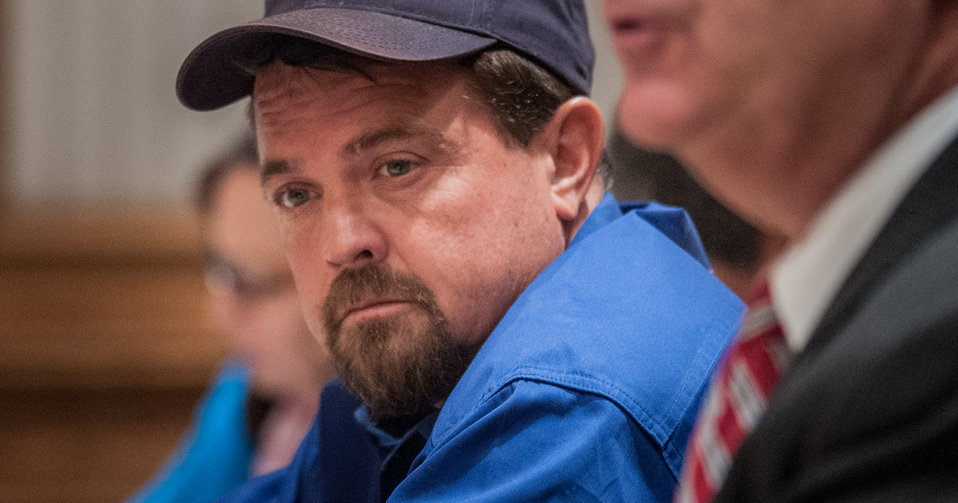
Henry “Porter” Holder a Farmer/Rancher of the Choctaw Nation in Soper, OK listens to what Agriculture Secretary Tom Vilsack, right, has to say to the U.S. Department of Agriculture's (USDA) Council for Native American Farming and Ranching (CNAFR) members, on Monday, Sep. 9, 2013 at the L'Enfant Plaza Hotel, in Washington, D.C. CNAFR was created to advise the Secretary on ways to eliminate barriers to participation for Native American Farmers and Ranchers in USDA programs. The Council was established as part of the Keepseagle settlement, and is conducted under the oversight of USDA's Office of Tribal Relations, which is part of the Office of the Secretary of Agriculture. Also in attendance is The Director of Tribal Relations Leslie Wheelock, Agriculture Assistant Secretary for Civil Rights Joe Leonard, Jr. Ph.D., Farm Services Administration Administrator Juan M. Garcia and Deputy Administrator for Farm Loans Programs Chris Beyerhelm.